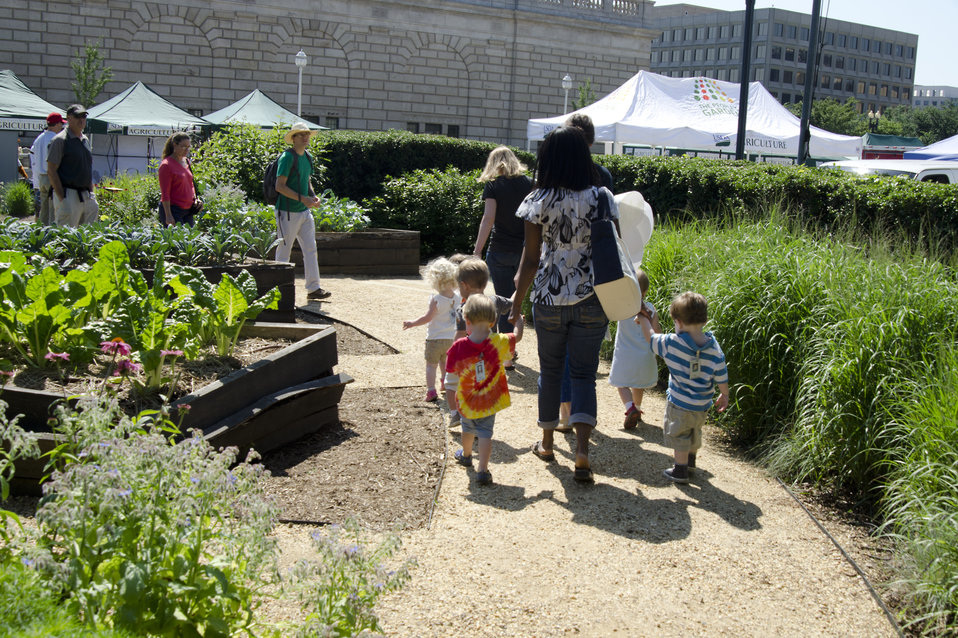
Peoples Garden Pollinator Display at the U.S. Department of Agriculture in Washington, DC, on Friday, June 21, 2013.